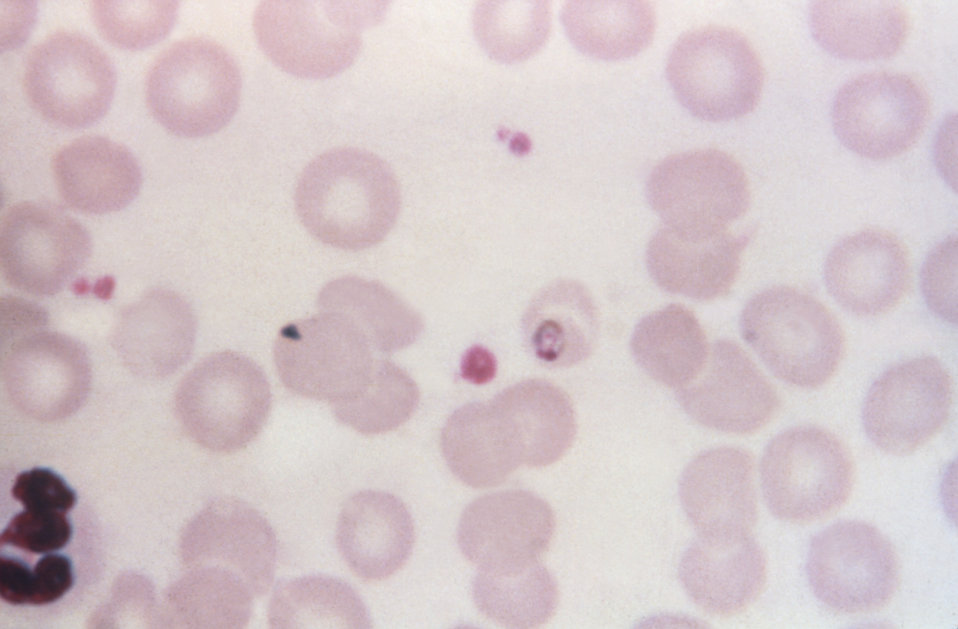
This thin film Giemsa stained micrograph depicts growing Plasmodium malariae trophozoites.